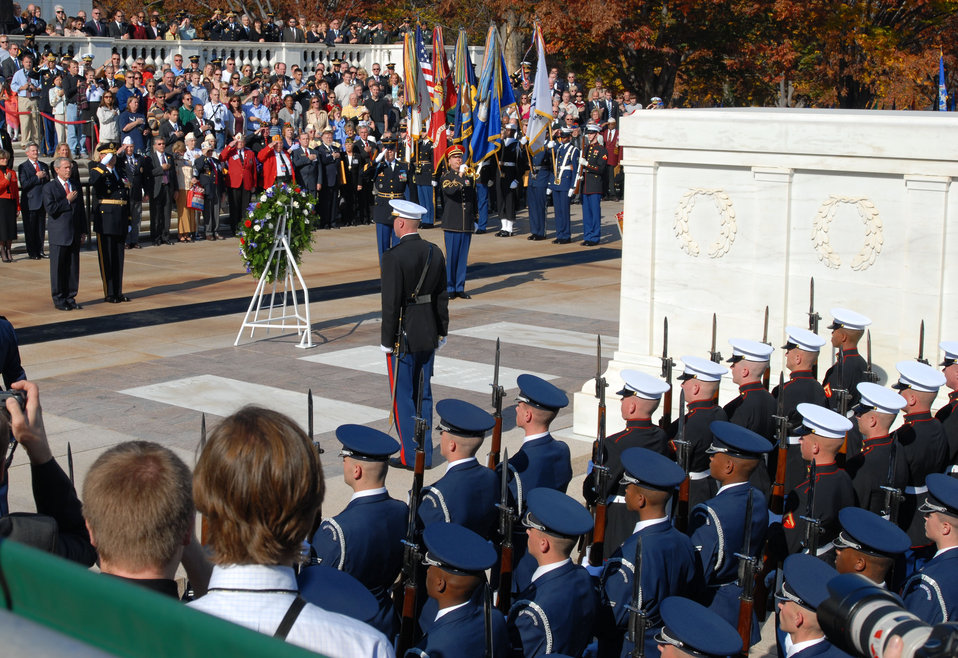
Commander in chief honors veterans

President George Bush lays a wreath at the Tomb of the Unknown Soldiers during a Veterans Day ceremony Nov. 11 at the Arlington National Cemetary in Arlington, Va. The Air Force Honor Guard formed a flight in attendance, along with each of the other four services, and carried the Air Force flag during the ceremony.